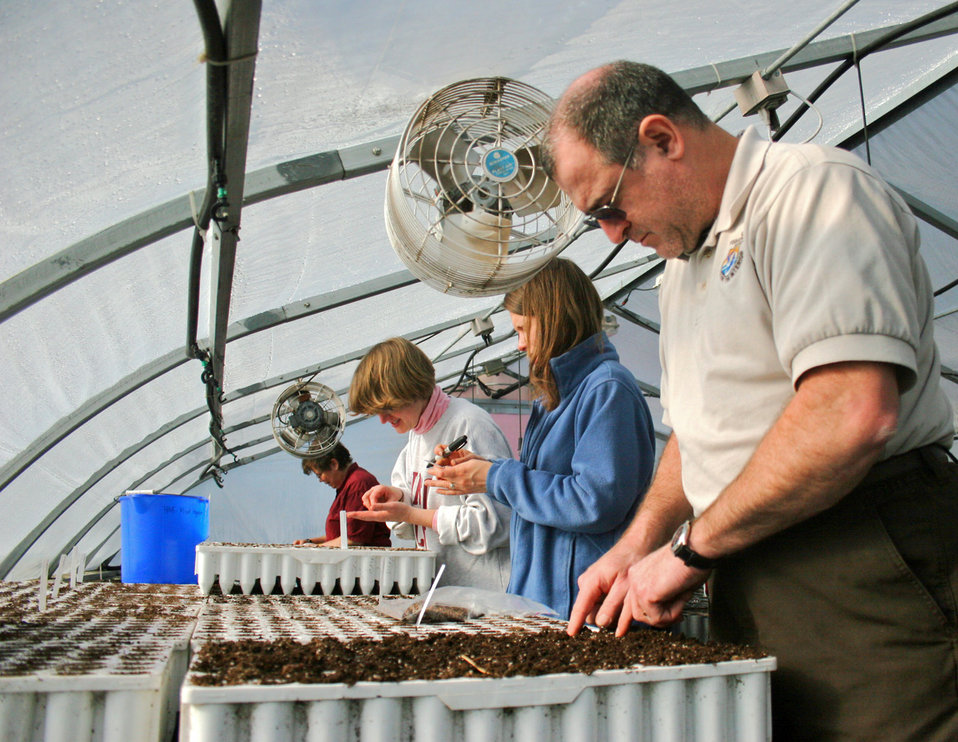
Greenhouse

Volunteers help harvest native seedlings at the Hiawatha National Forest greenhouse in Marquette, MI on Mar. 26, 2013.